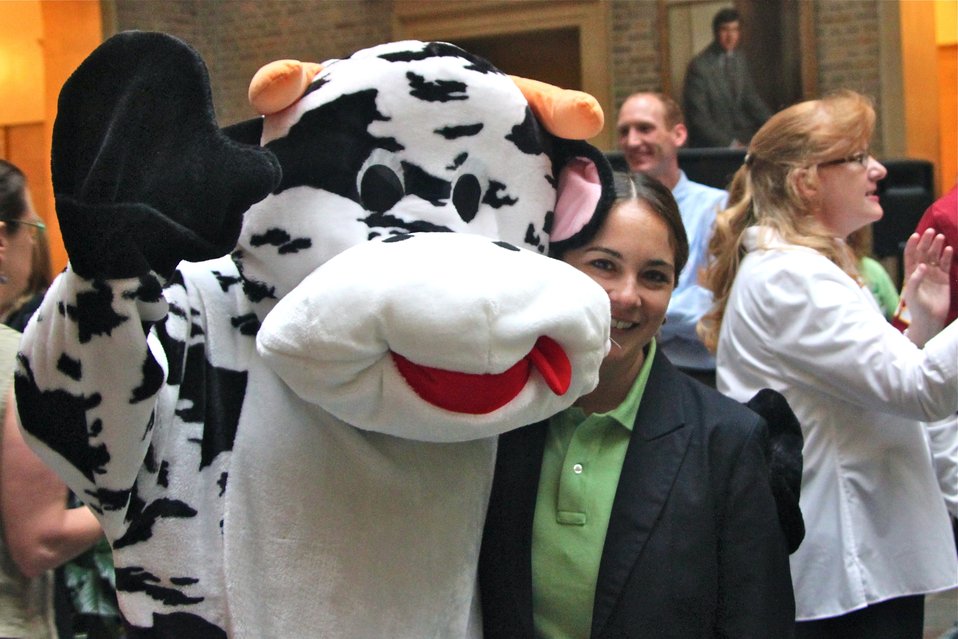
Dairy Cow Wave

The U.S. Department of Agriculture (USDA) Agricultural Marketing Service (AMS) Dairy Cow waves hello at the USDA Farmers Market opening on Friday, Jun. 7, 2013.